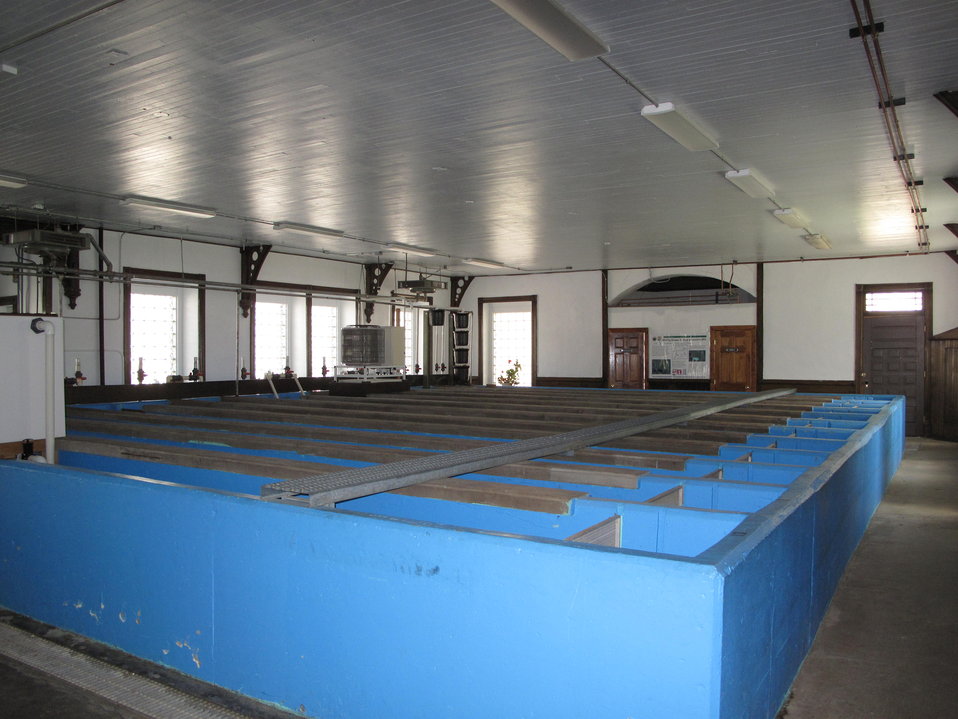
Leadville National Fish Hatchery

The many cement raceways located within the visitor center.